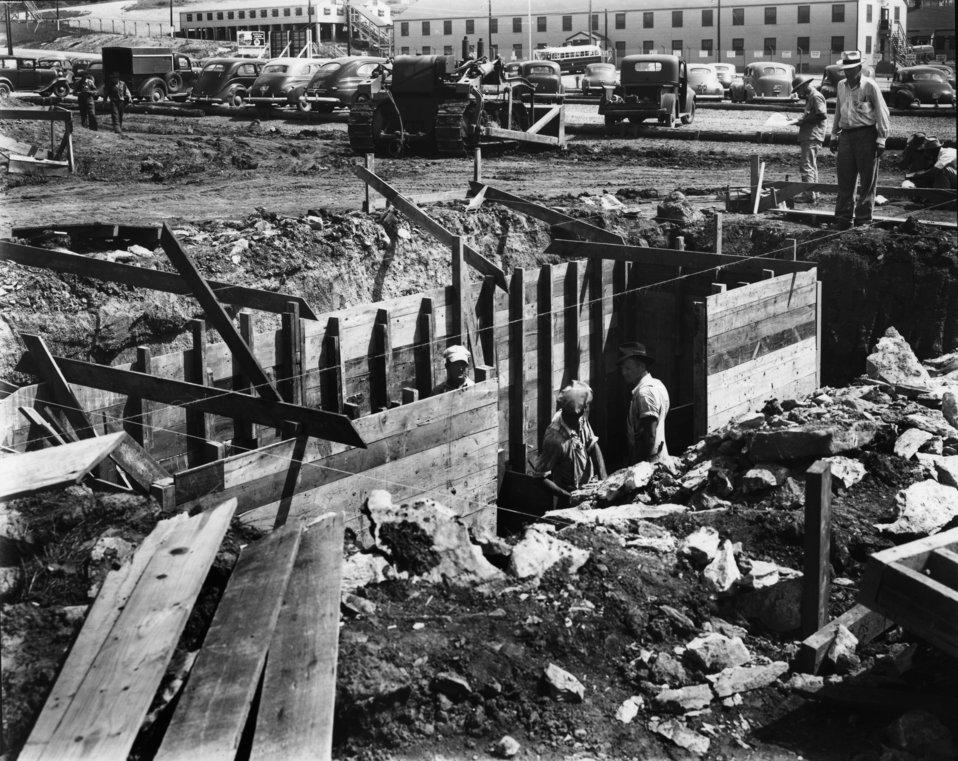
Early Construction ORNL Oak Ridge 1943

X-10-30 DOE photo Ed Westcott 1943 Oak Ridge Tennessee